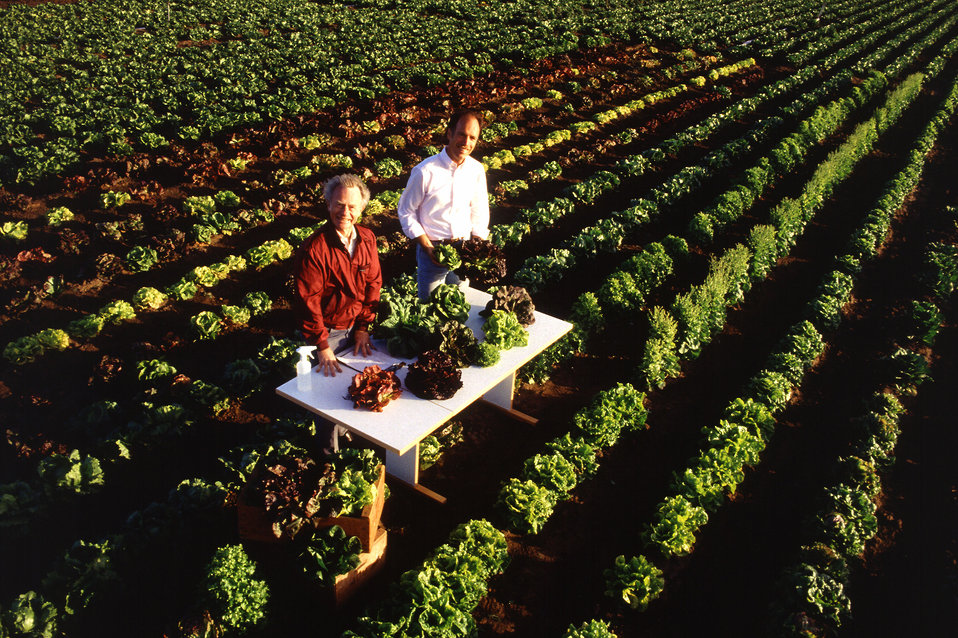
Showy colors, bizarre shapes, or surprising textures of exotic lettuces may brighten salads of the future. U.S. Department of Agriculture (USDA) Agricultural Research Service (ARS) researcher Edward Ryder and colleague William Waycott scrutinize an exceptional array of unique lettuces in the Salinas Valley in California.